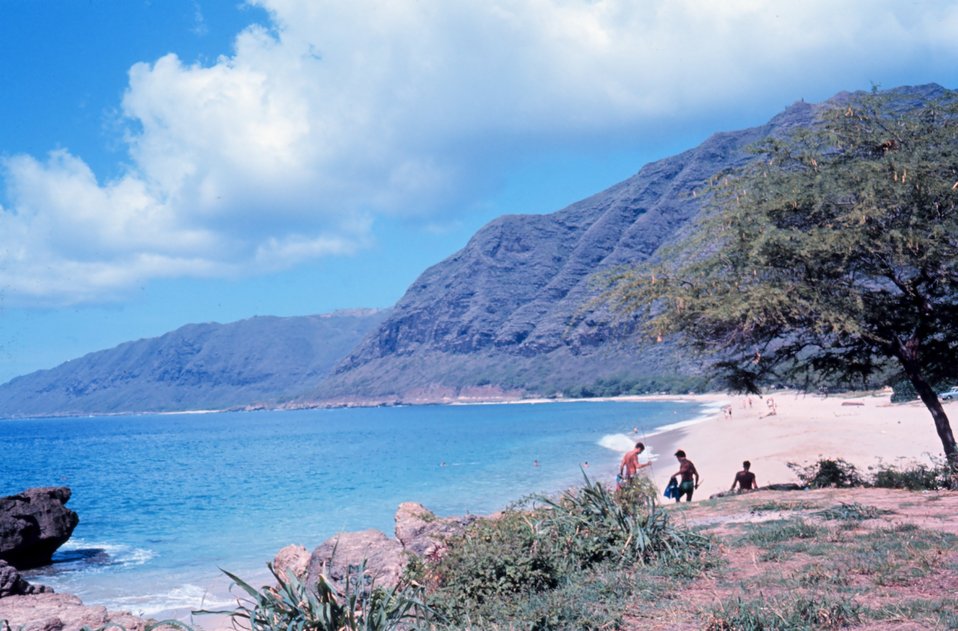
Waianae coast -southwest Oahu